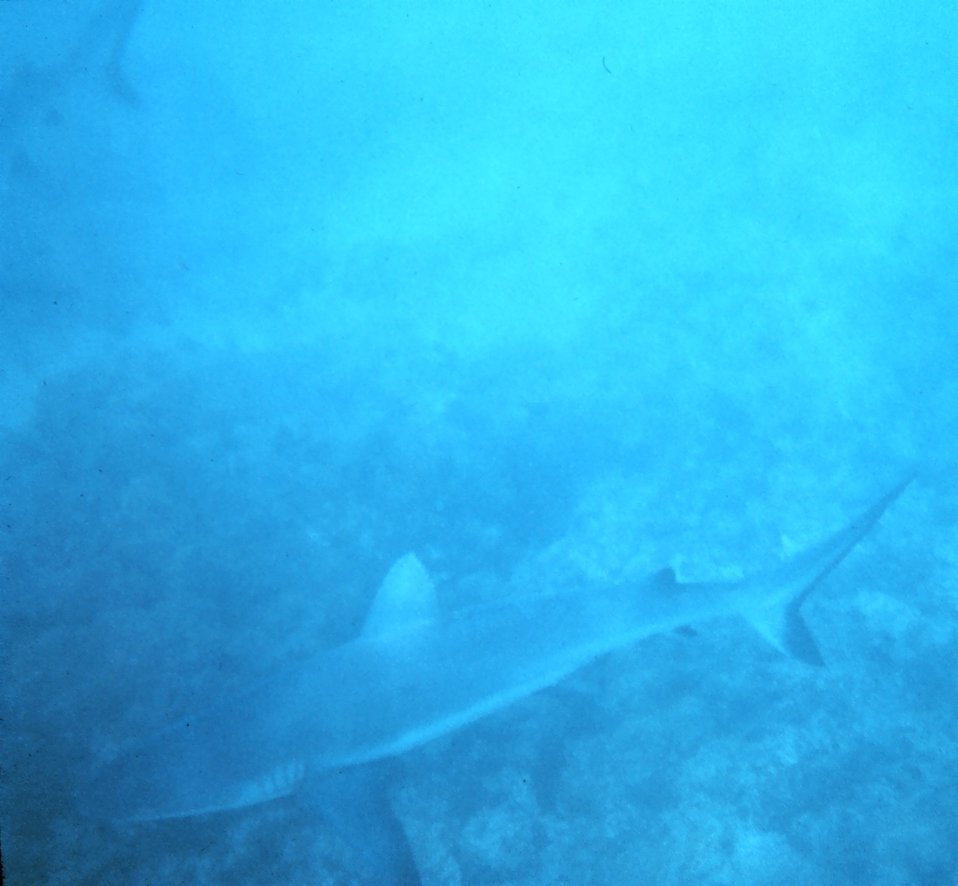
Large shark with tail of another visible in upper left corner.